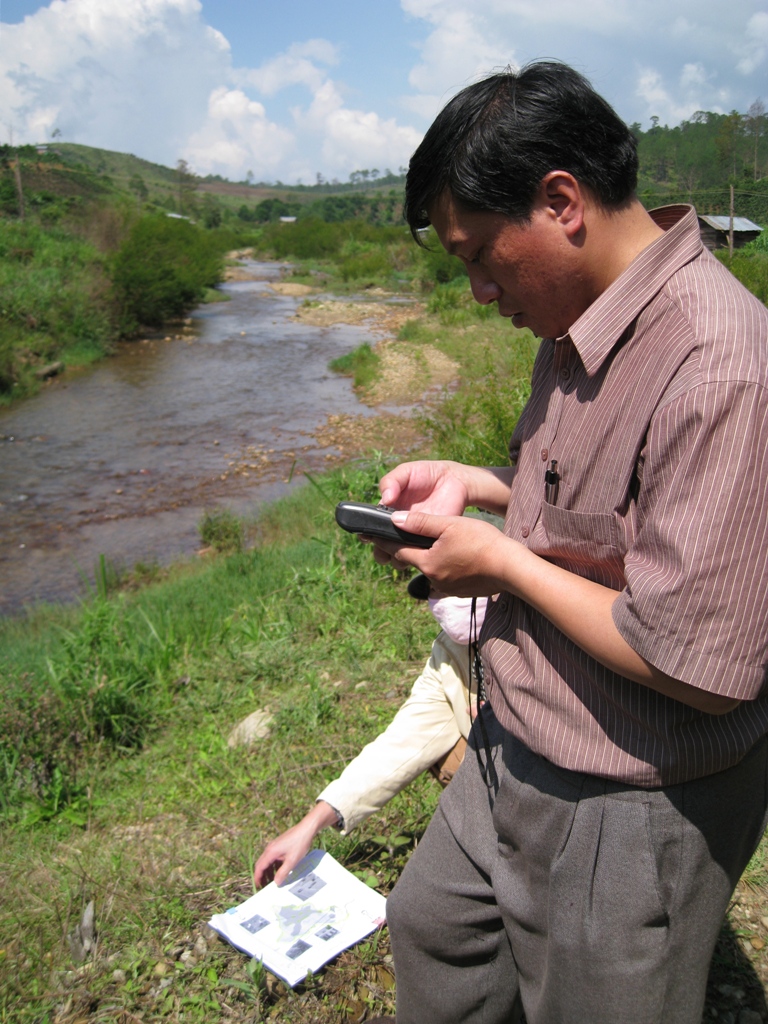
USAID helps Vietnam conserve biodiversity through community involvement.